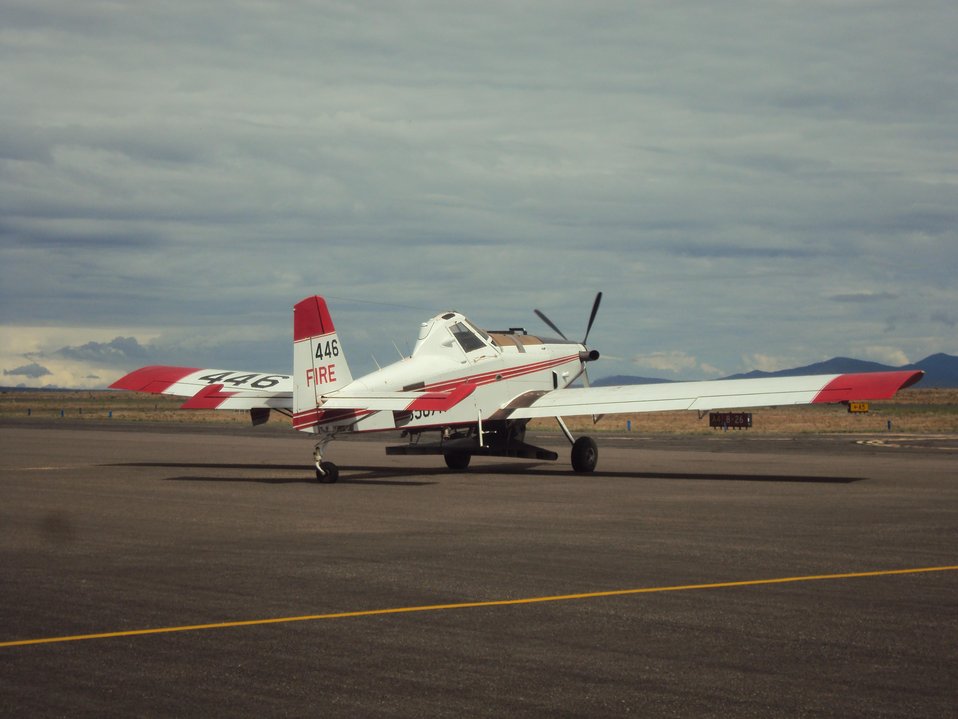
A single engine Air Tractor agricultural plane is used for seeding operations severe burned areas from the Silver Fire in the Gila National Forest near Kingston, NM. The Silver Post Fire response has the Burned Area Emergency Response (BAER) team beginning operations to seed acres of high burn severity and to mulch additional acres. Seeding reduces effects to downstream life, property, and infrastructure by reducing erosion and runoff. Areas of high burn severity are to be seeded with a quick germinating, non-persistent annual cereal barley that would provide rapid ground cover. A small percentage of native perennial species would also be included to give the burned area a jump start in natural recovery, and provide for long-term ground cover. Mulch is the most effective treatment for controlling erosion and runoff, as it provides immediate ground cover. Mulch also assists in stabilizing soil in and around these areas. Aircraft for seeding operations will be based at the Gila National Forest Air Tanker Base.